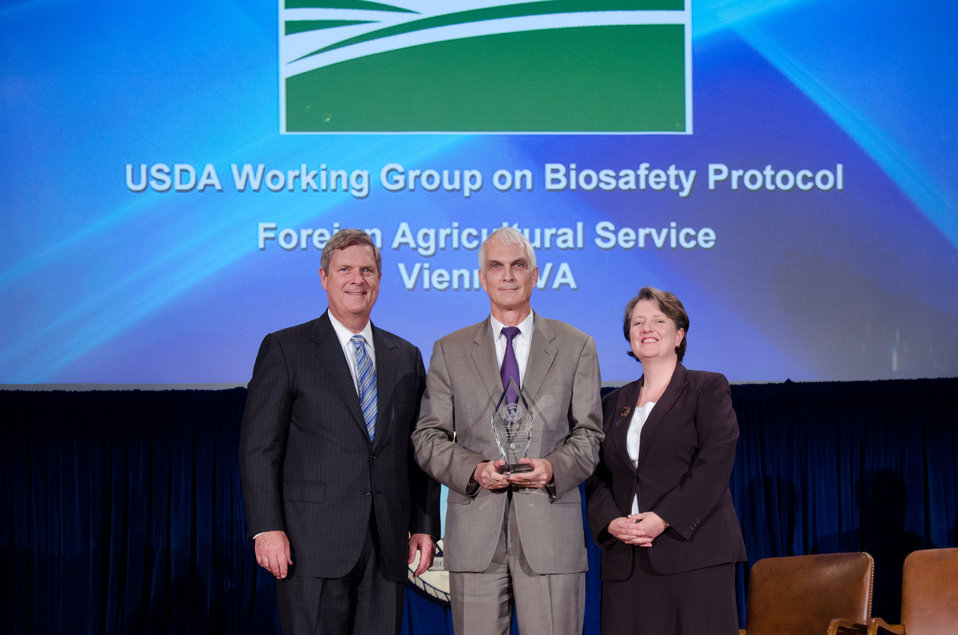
Agriculture Secretary Tom Vilsack (l) and Deputy Secretary Kathleen Merrigan (r), presents the Helping America Promote Sustainable Agricultural Production and Biotechnology Exports As America Work To Increase Food Security. Award to USDA Working Group on Biosafety Protocol, Foreign Agriculture Service, Vienna, VA. Ed. Porter, Group Leader. For exemplary service supporting U.S. biotechnology trade by successfully influencing United Nation negotiations of the Nagoya-Kuala Lumpur Supplementary protocol on Liability and Redress to the Cartagena Protocol on Biosafety. On Wednesday, September 14, 2011 in the Jefferson Auditorium at the US Department of Agriculture in Washington, DC.